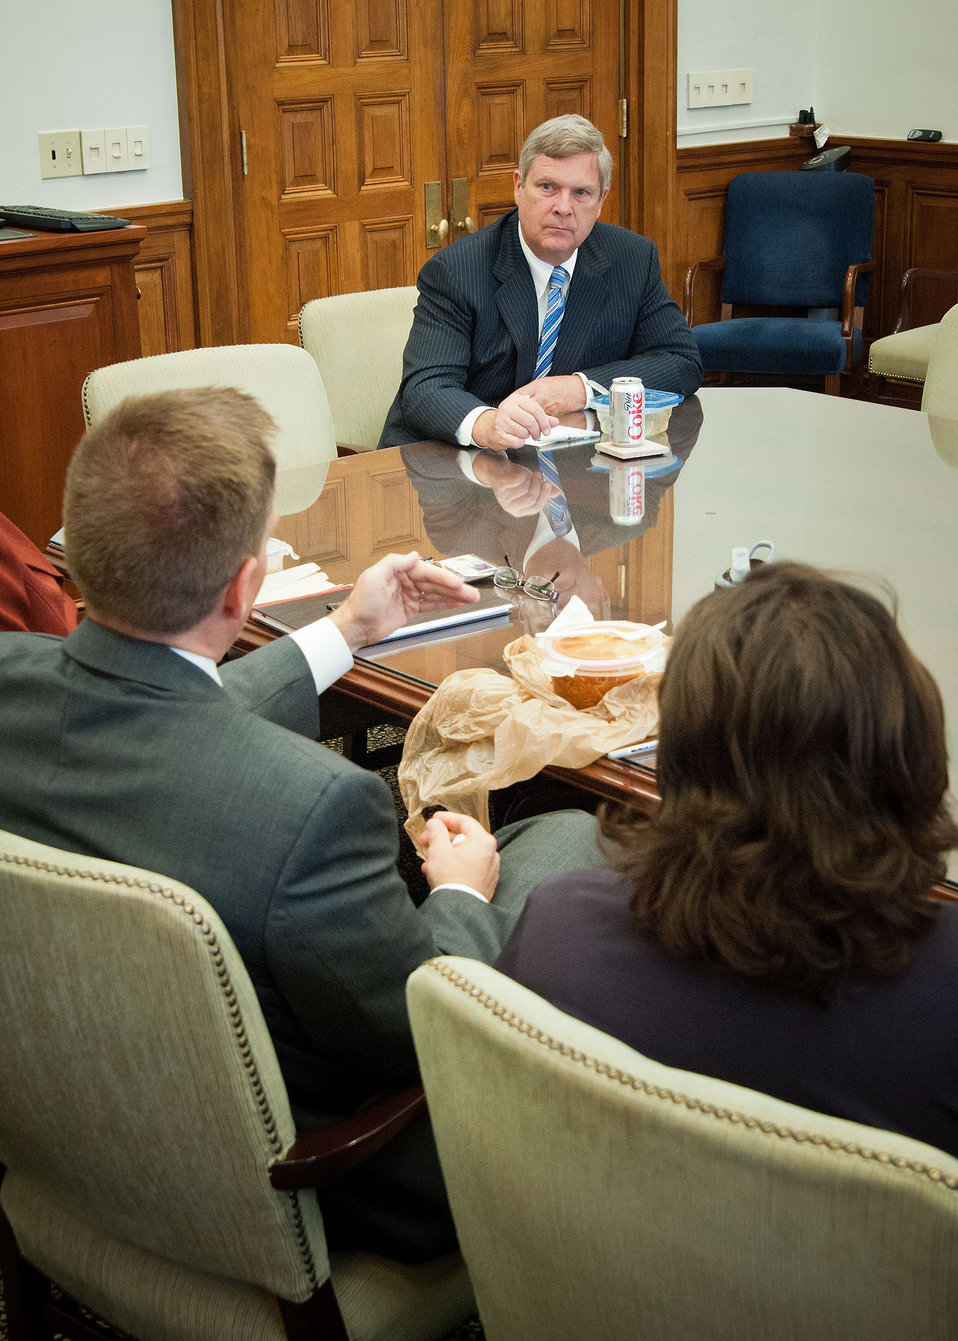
Agriculture Secretary Tom Vilsack listens to U.S. Department of Agriculture (USDA) Forest Service Fire and Aviation Management Deputy Director Robert Baird during a Brown Bag Lunch held with Secretary Vilsack in Washington, D.C. on Wednesday, Sept. 26, 2012. Secretary Vilsack holds the occasional Brown Bag Lunches to gain information and knowledge to assist in the administration of the affairs and programs of the Department, and to thank the employees for their diligent work to the Department and as public servants, as well as gaining knowledge of the professions of the employees. Secretary Vilsack was sincerely interested in learning to know the employees working for the Department.